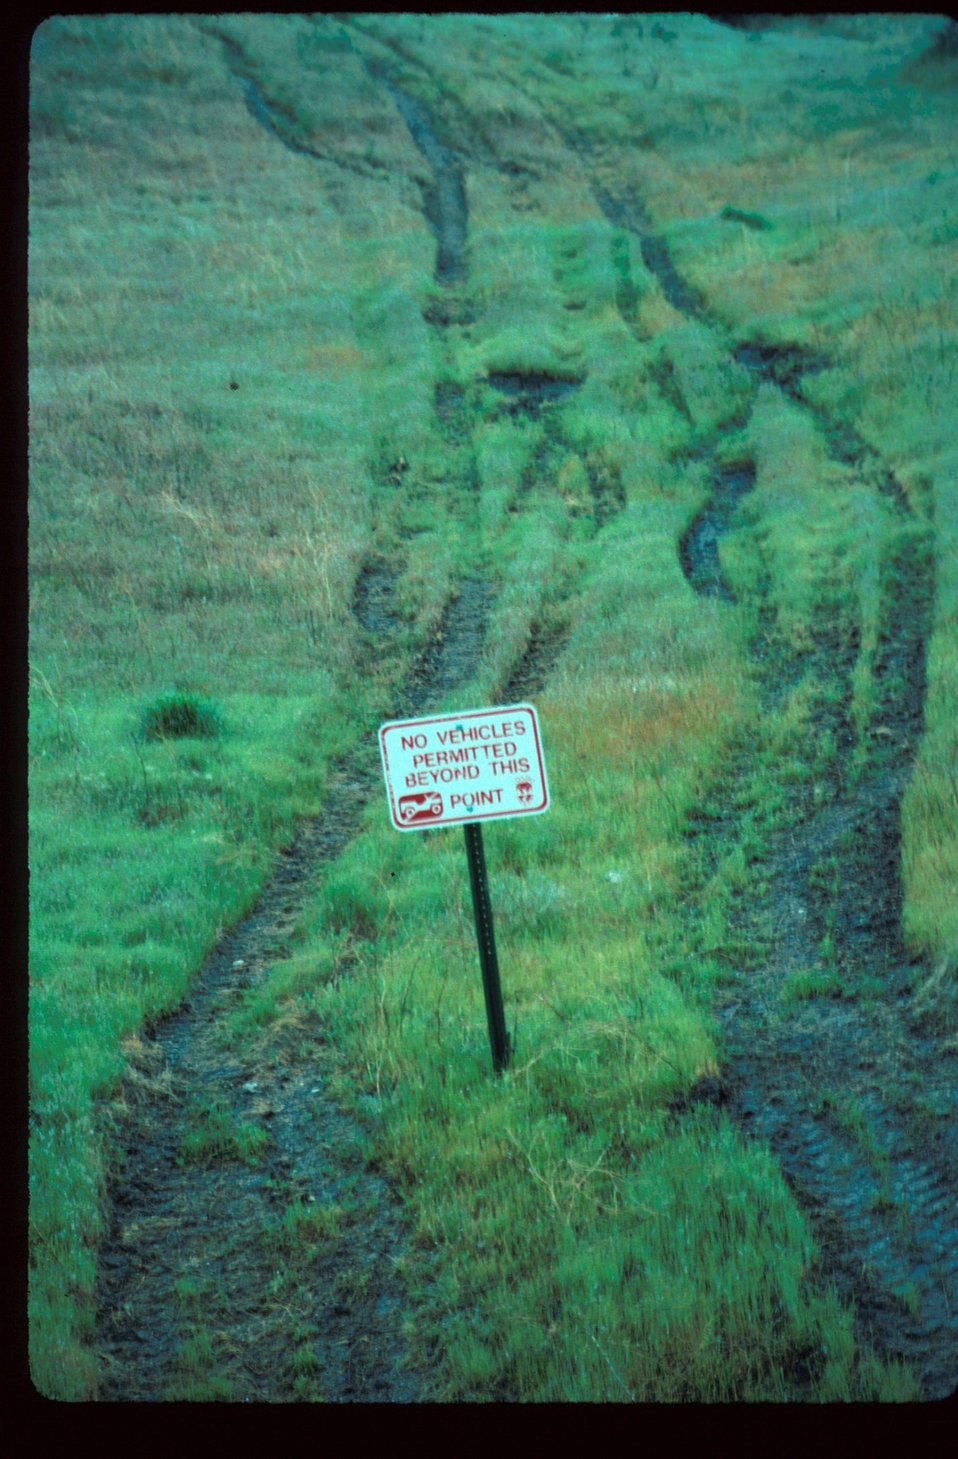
Boise Front, Wildlife Area Range Restoration Project